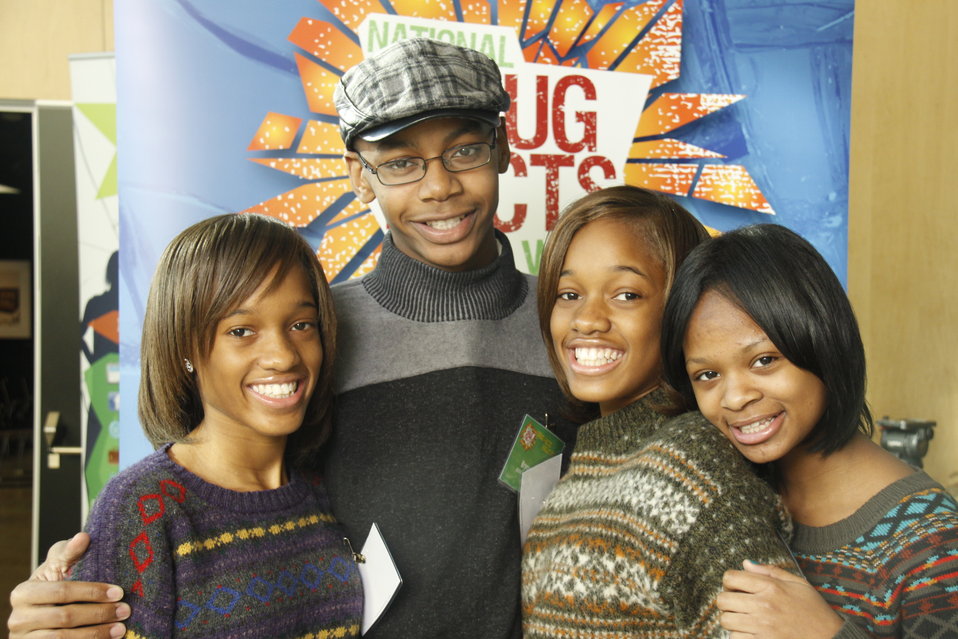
NDFW Mentor Event